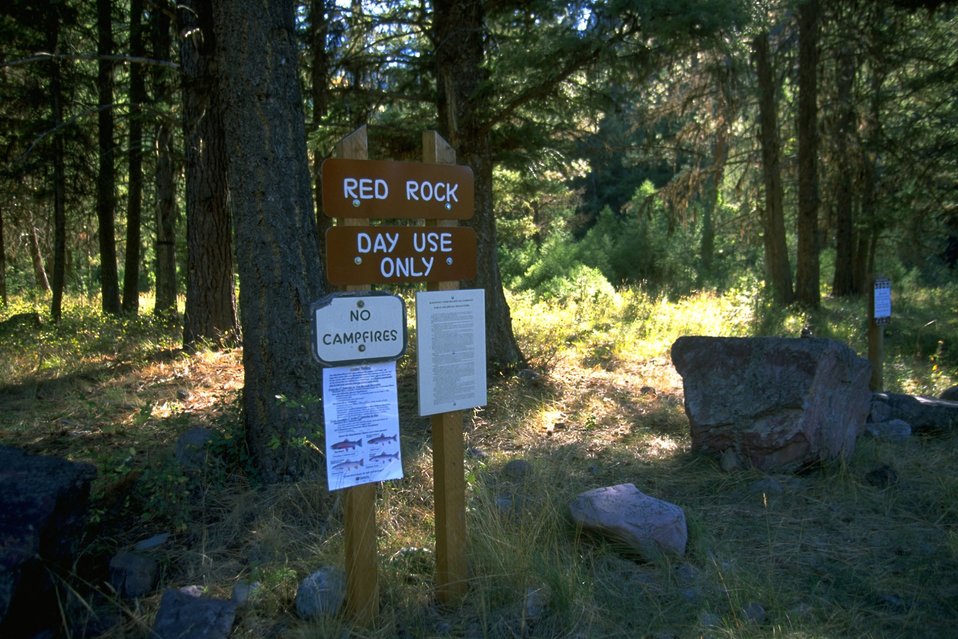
Red Rocks day use area sign (Blackfoot River)